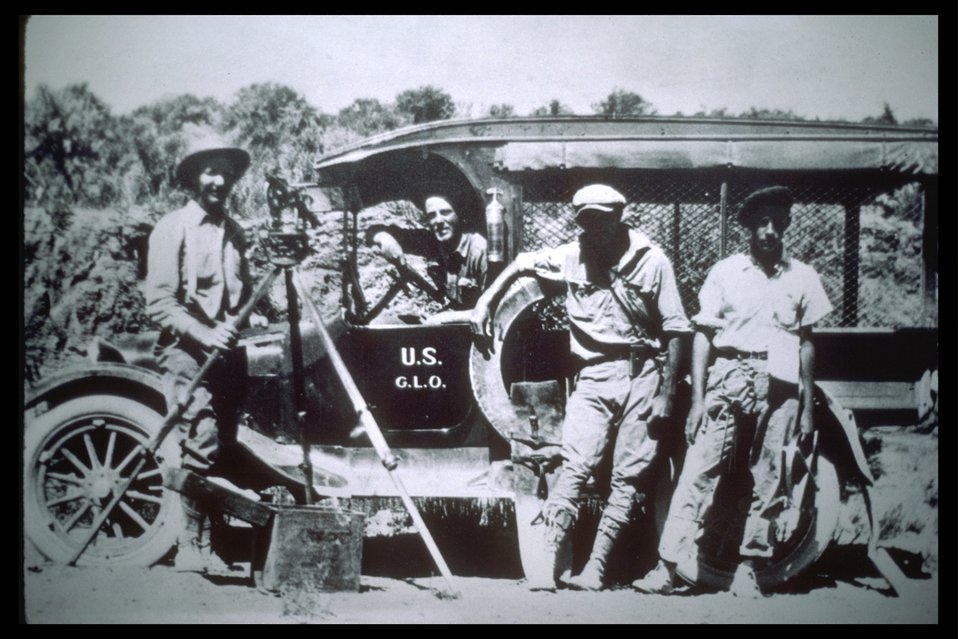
Black & White photo of U.S. G.L.O. truck with surveyors. (Famous photo)